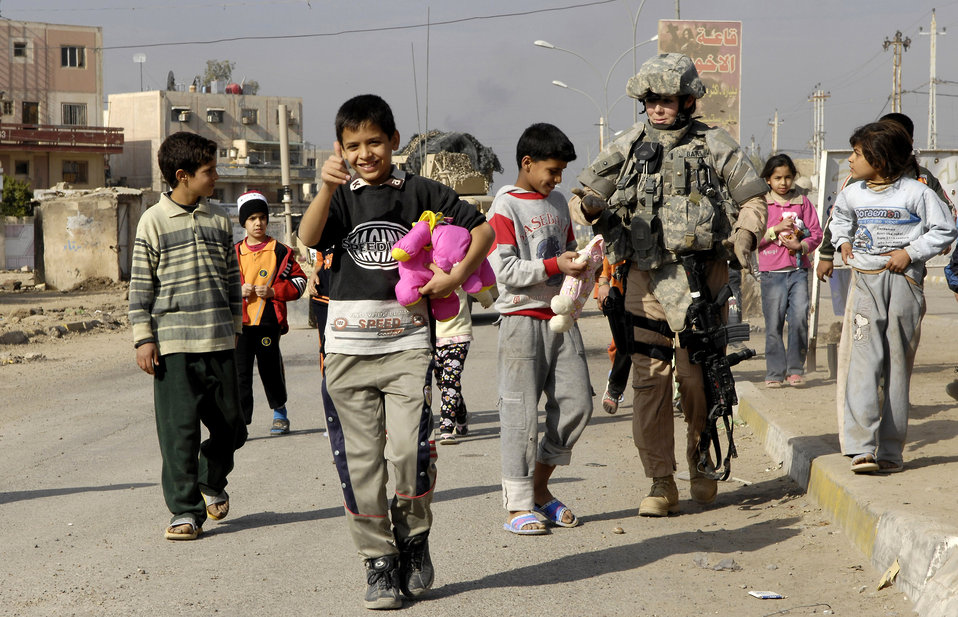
Toys for Iraqi tots

1st Lt. Cassandra Bates walks with a group of Iraqi children during a community relations outreach event with Iraqi police and Air Force security forces Dec. 18 in Baghdad, Iraq. Security forces members from Det. 3 of the 732nd Expeditionary Security Forces Squadron, attached to the Army's 92nd Military Police Brigade, help train, mentor and coach the Iraqi police to help build a secure and independent Iraq.